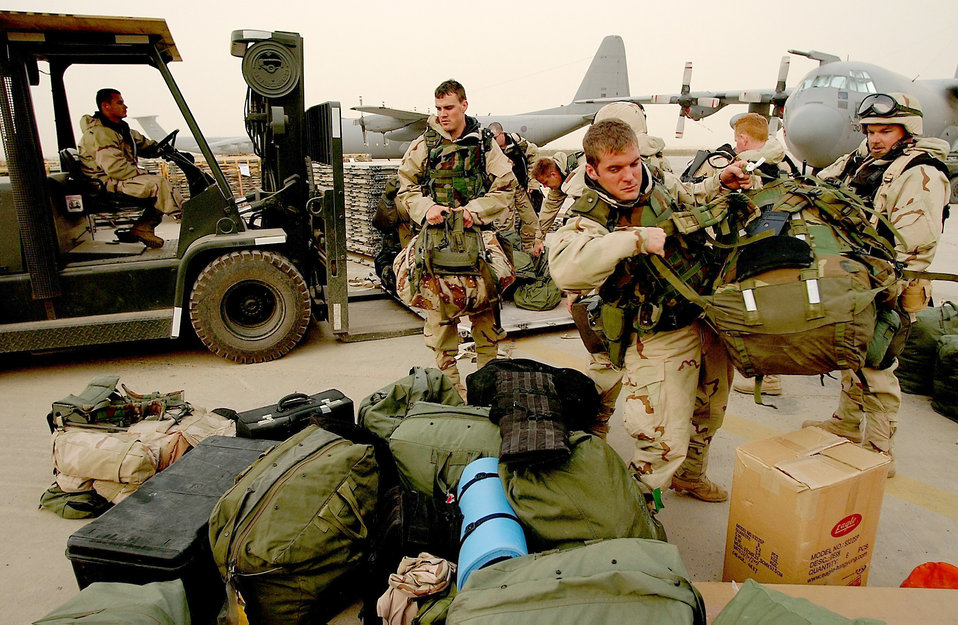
Bag drag

OPERATION IRAQI FREEDOM -- Members of the 821st Tanker Airlift Control Element load their personal bags onto a pallet for shipment to an undisclosed forward-deployed location, March 27, 2003. The 821st TALCE is deploying in support of Operation Iraqi Freedom.